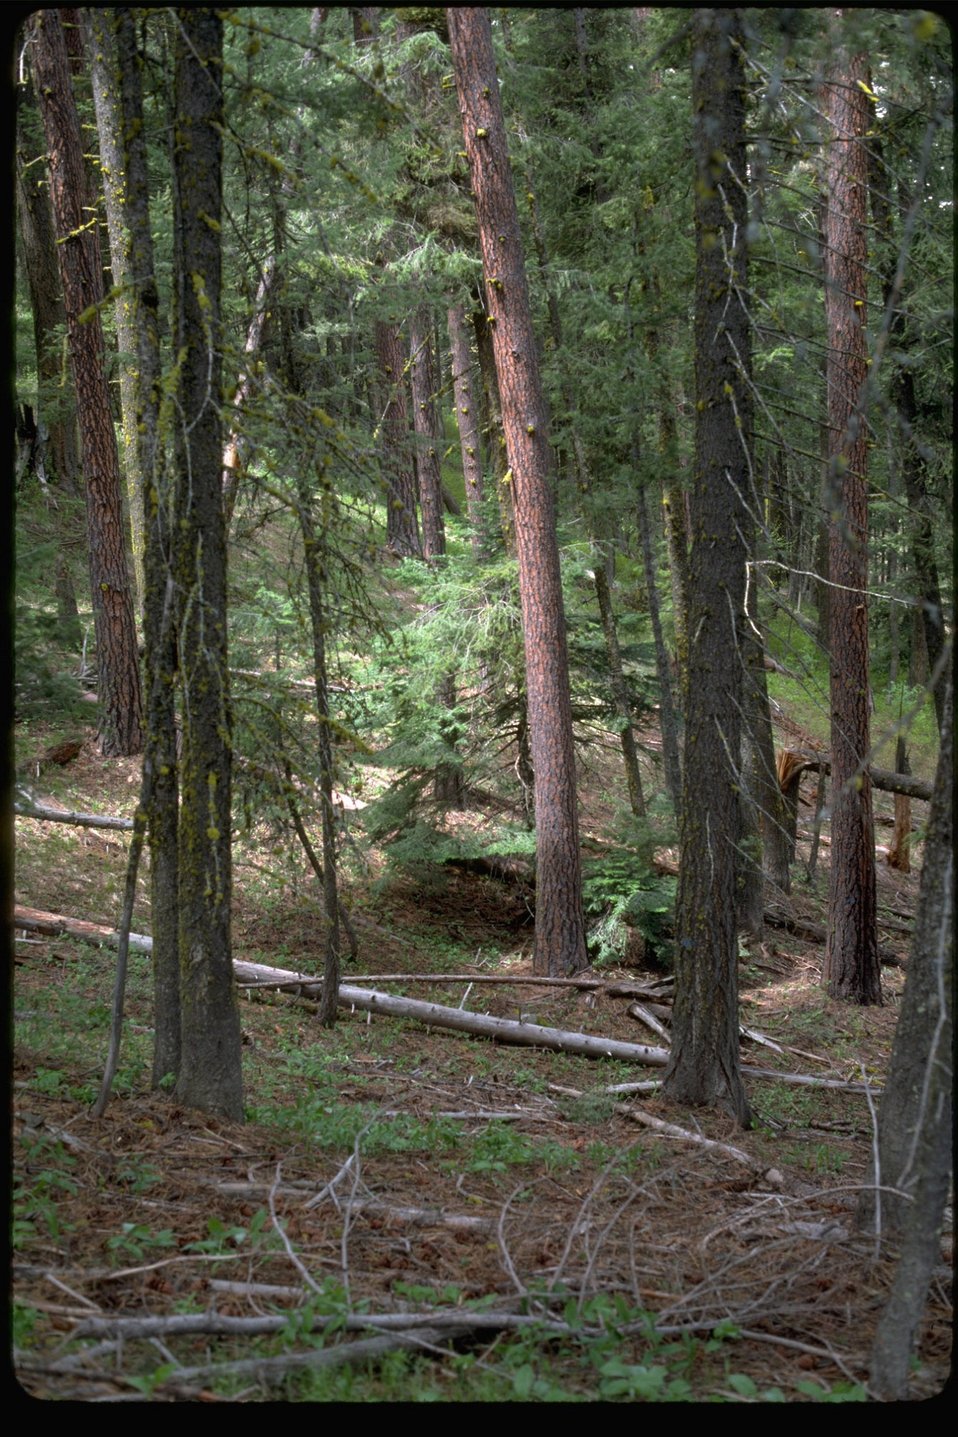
View of the forests in the Homestead Wilderness Study Area in the Vale District.